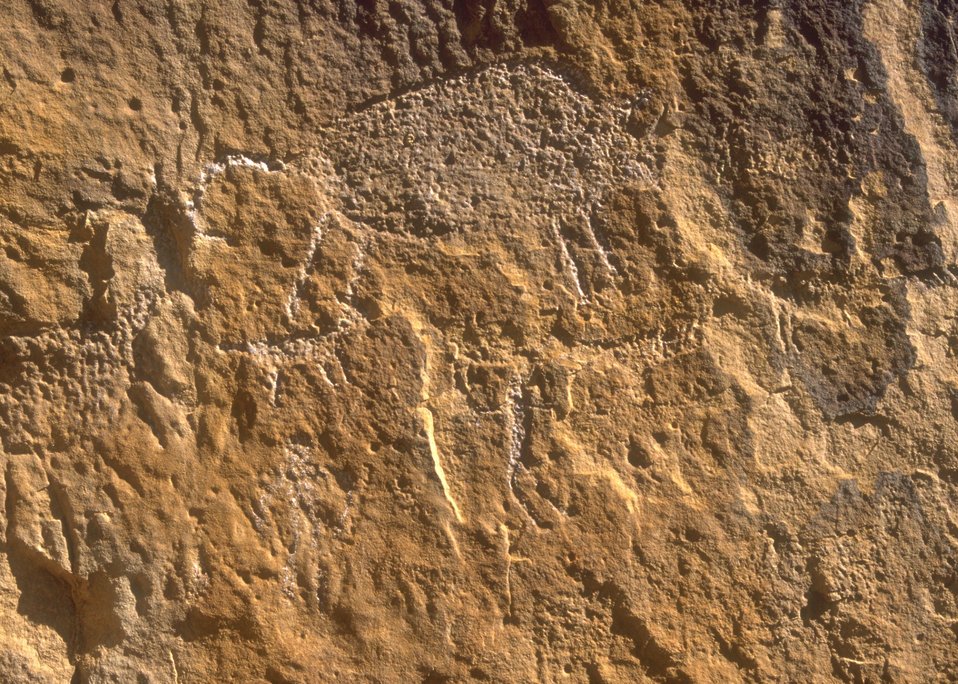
Petroglyph panel in Whoopup Canyon, Newcastle Field Office.